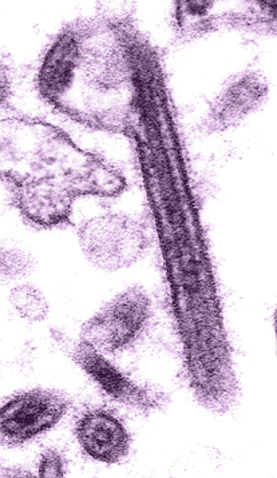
Colorized Transmission Electron Micrograph of the Ebola Virus